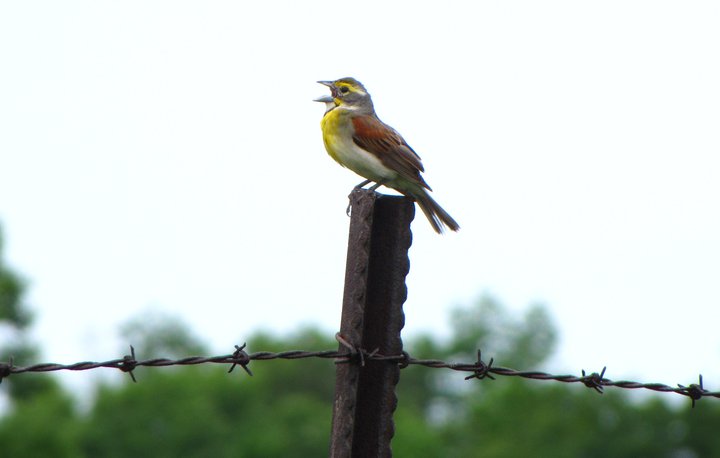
dickcissel

Port Louisa National Wildlife Refuge